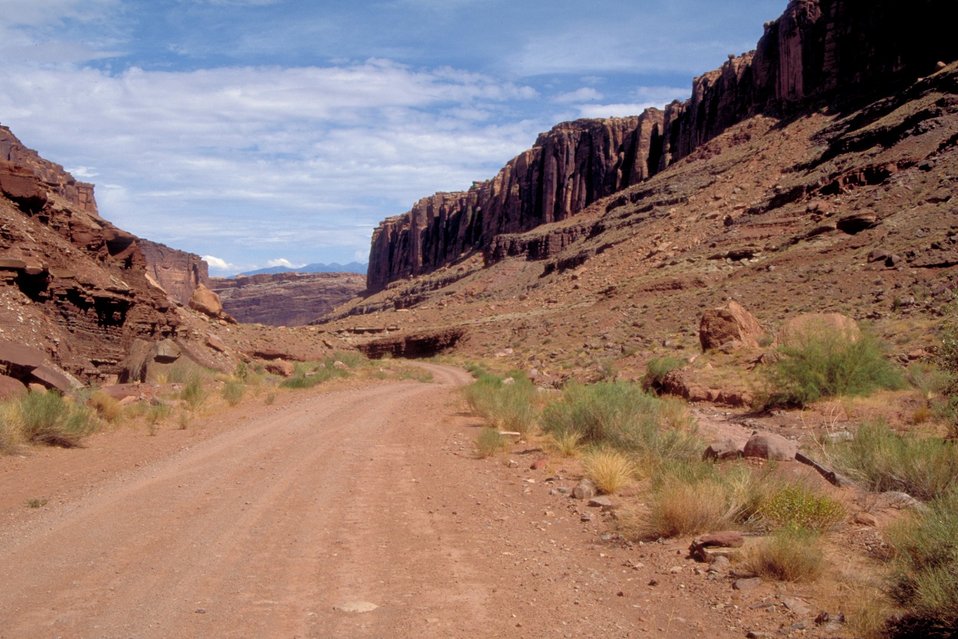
Road along the Colorado Riverway near Moab, Utah.